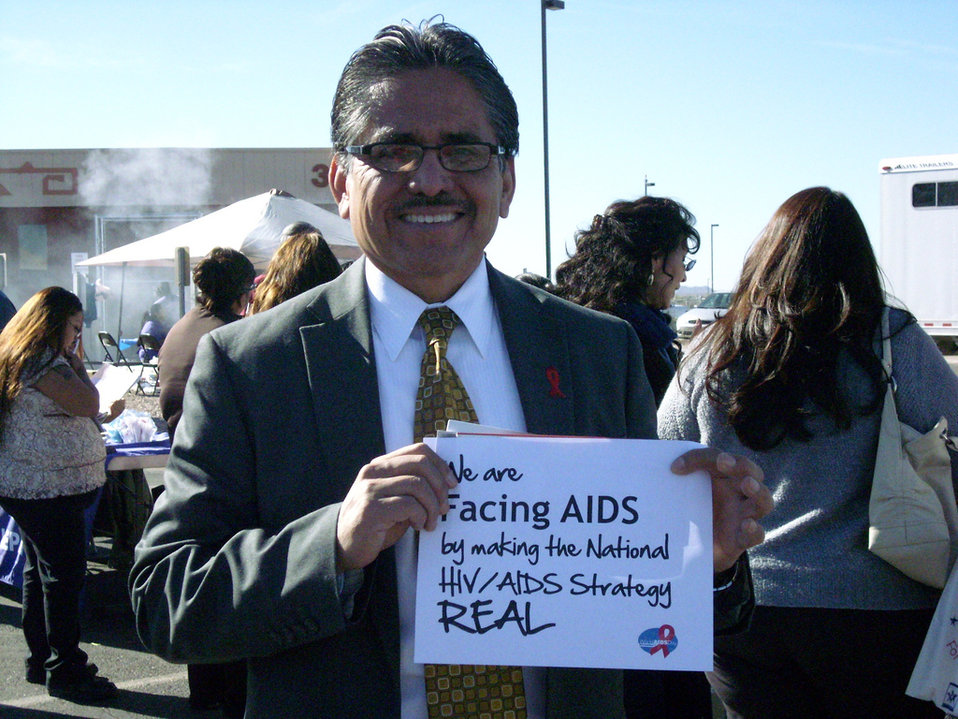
We are Facing AIDS through NHAS-43